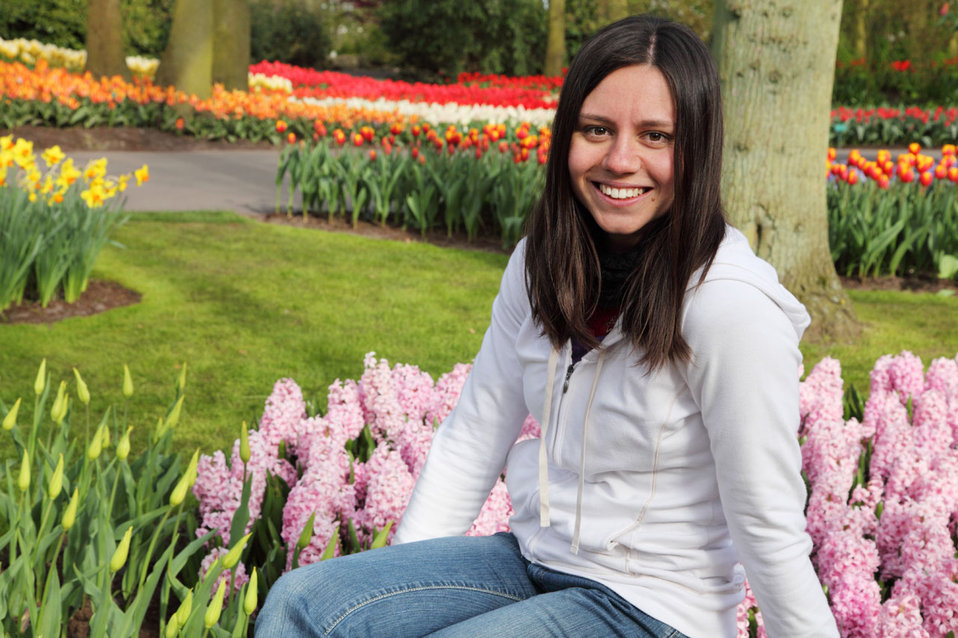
Young woman in flower garden

Young woman in keukenhof gardens.